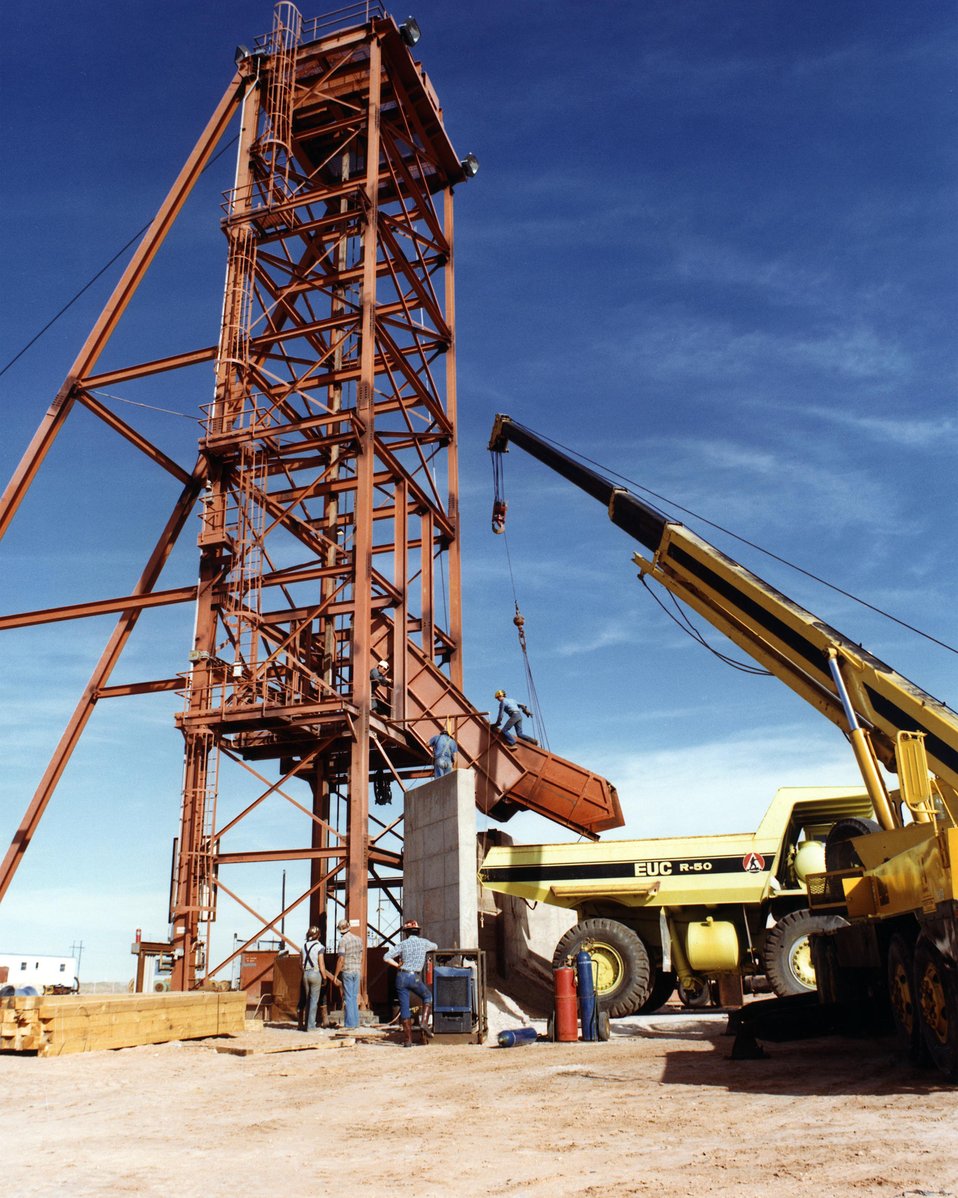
WORKMEN WELD THE CHUTE ONTO THE HEAD FRAME.